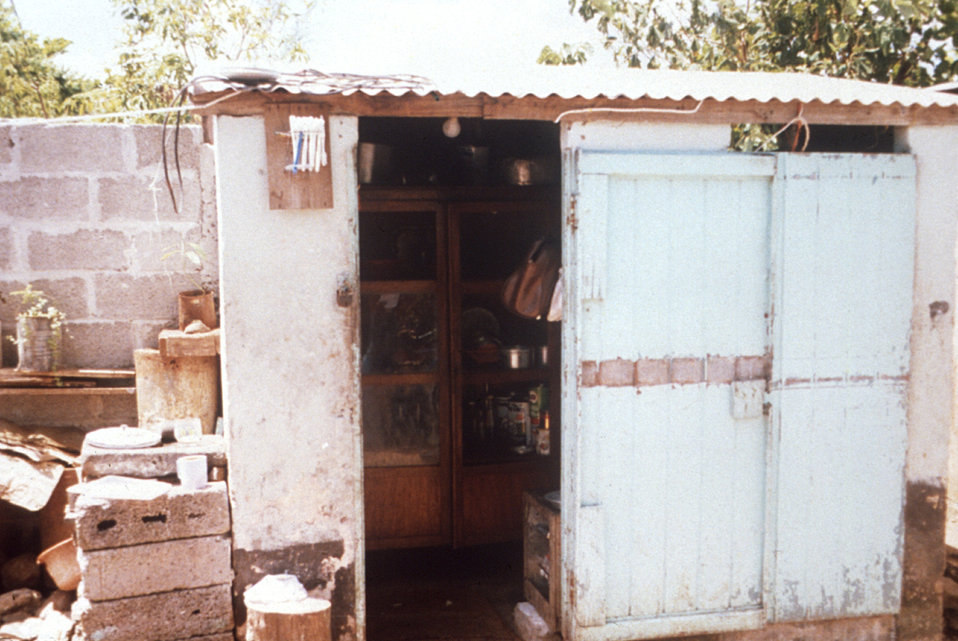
This 1980 image depicts what was a typical water closet and kitchen area in Cite' Roche Bois, Mauritius